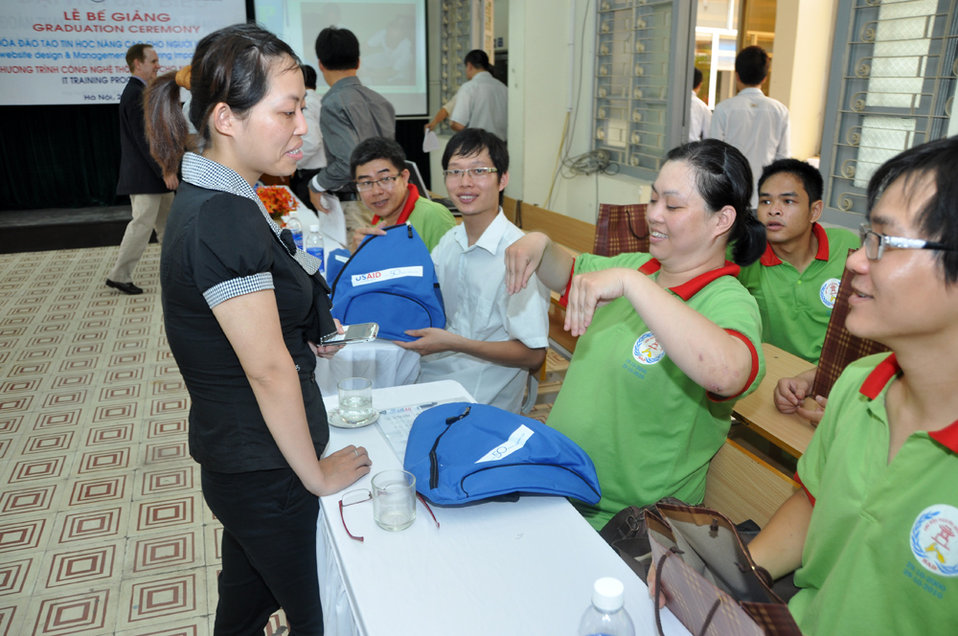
Hearing Impaired Graduates receive USAID 50th shoulder bags on June 22, 2011.